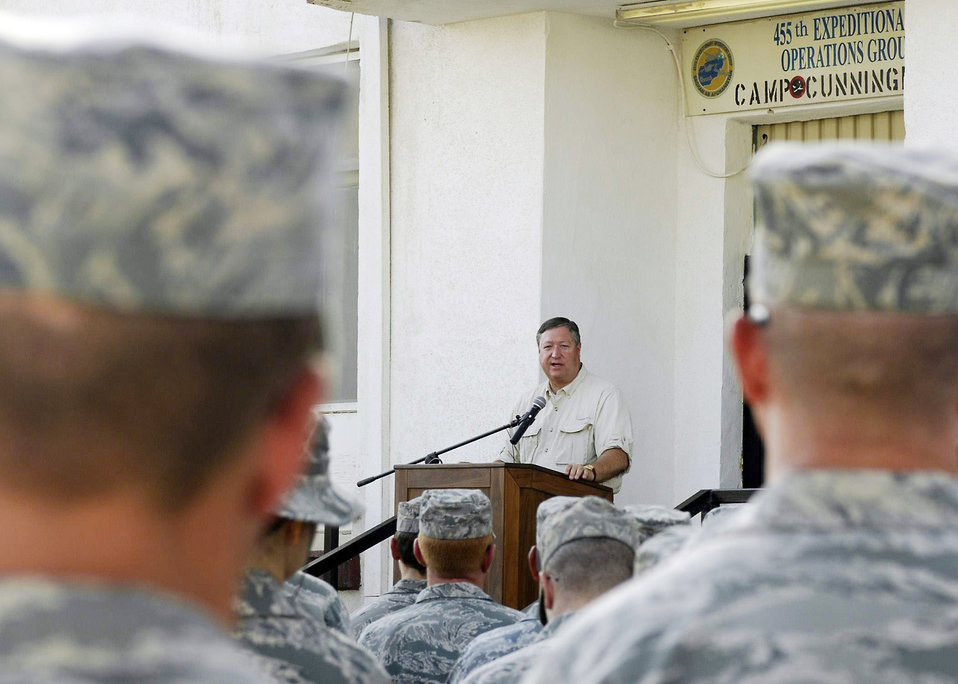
Air Force secretary praises Airmen, discusses ops with Bagram Airmen

Secretary of the Air Force Michael B. Donley thanks members of the 455th Air Expeditionary Wing for their efforts in taking the fight to the enemies of
Afghanistan Aug. 29, 2009, at Bagram Airfield, Afghanistan. Secretary Donley listed many missions Airmen carry out on a daily basis in support of the joint fight and thanked the Airmen for all their hard work.